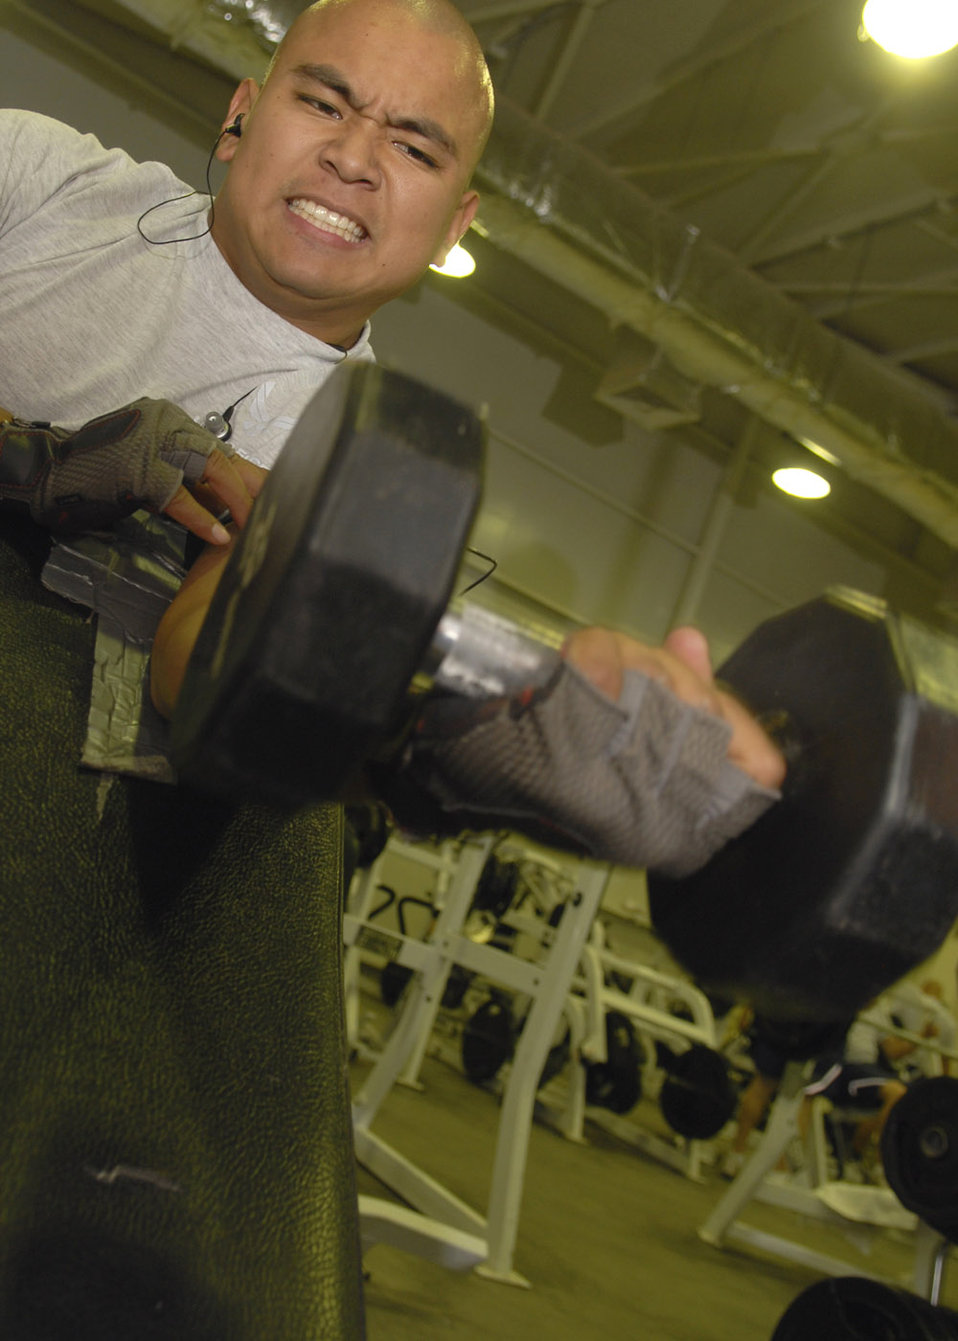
Staying fit for the fight

Staff Sgt. Thomas Garcia uses a dumbbell to sculpt his biceps at the fitness center at Balad Air Base, Iraq, Oct. 19. To help build more muscle mass, Sergeant Garcia increases the weight with each set he performs. He is assigned to the 727th Expeditionary Air Control Squadron